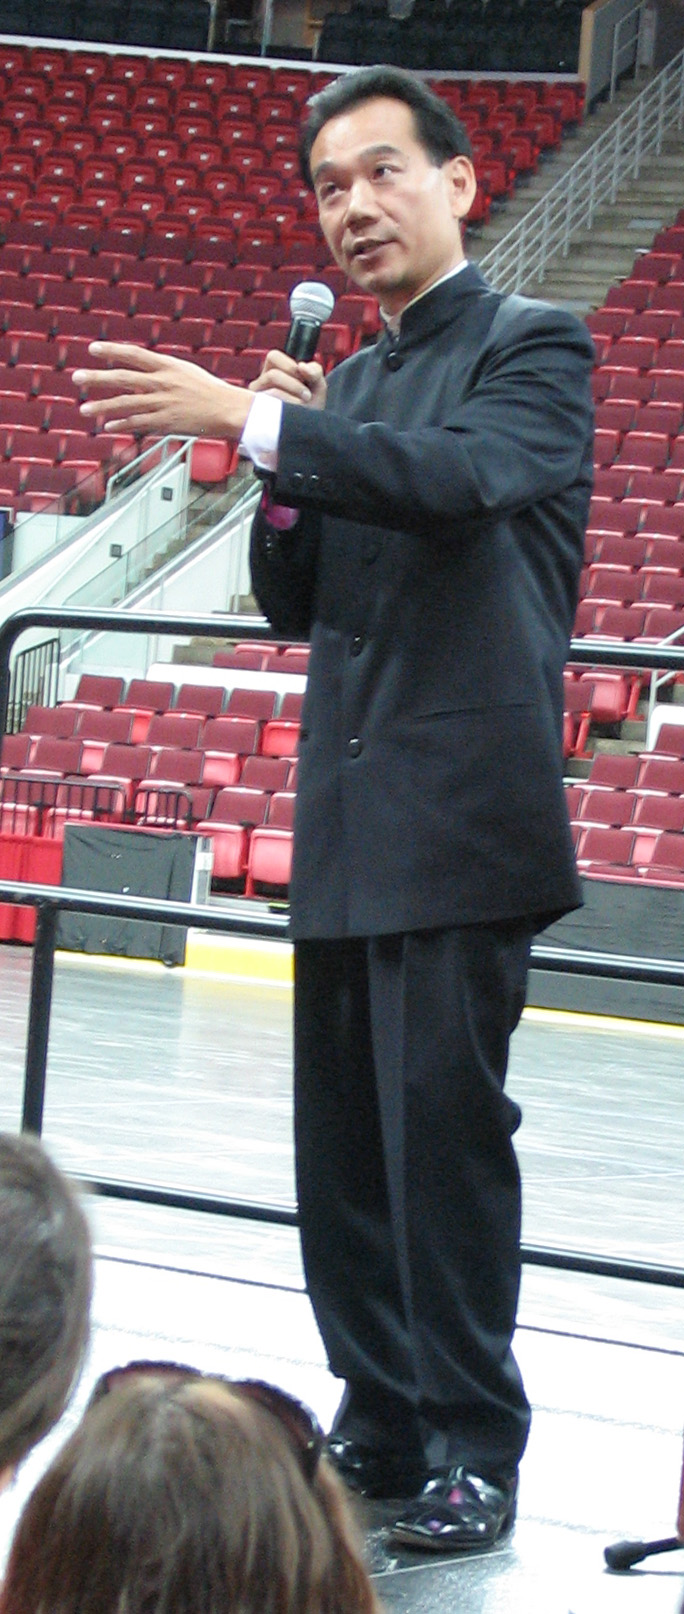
Da Chen speaking at NCSU convocation